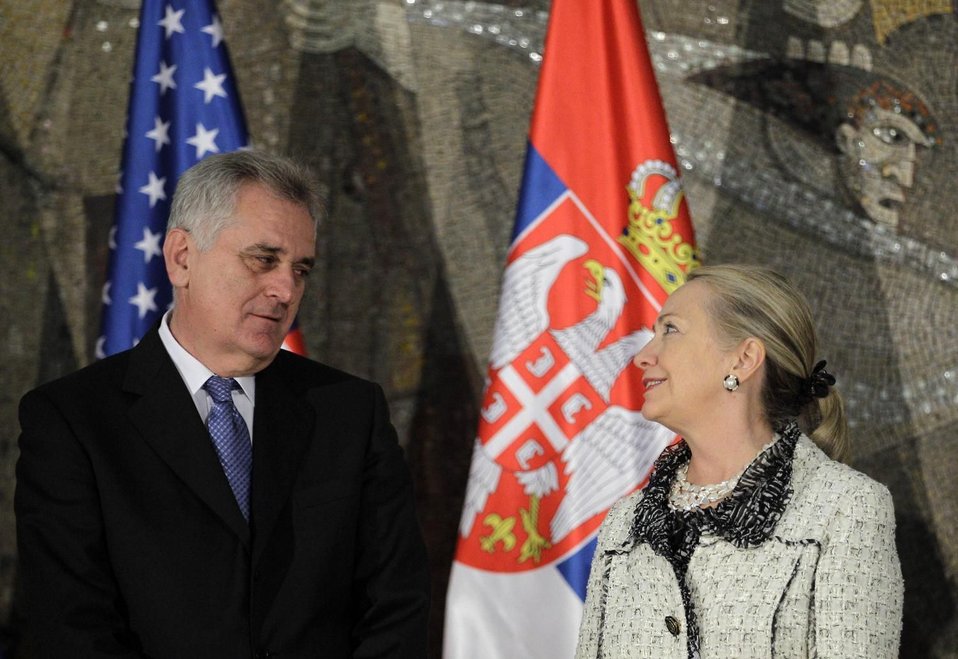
Secretary Clinton Meets With Serbian President Nikolić

U.S. Secretary of State Hillary Rodham Clinton meets with Serbian President Tomislav Nikolić at the Palace of Serbia, Belgrade, October 30, 2012. [FoNet photo]